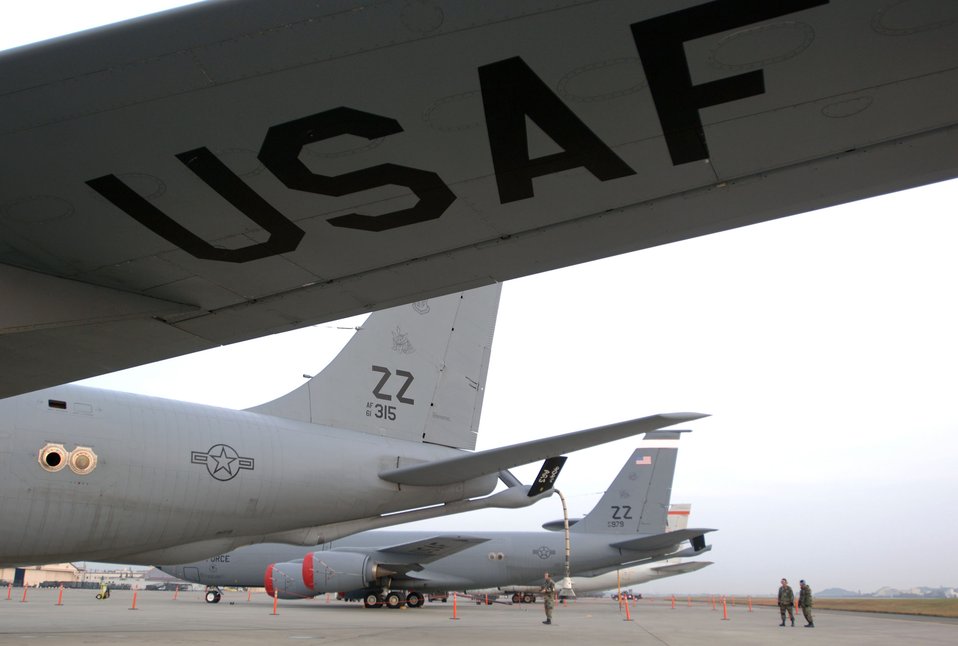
Keeping Stratotankers flying

YOKOTA AIR BASE, Japan (AFPN) -- (Left to right) Tech Sgt. Julian Christian, Staff Sgt. Gene Pietro and Senior Airman James Taimanglo inspect their KC-135 Stratotanker aircraft before an exercise Cope North 05 morning sortie. Cope North is a bilateral exercise designed to enhance U.S. and Japanese air operations. It gives pilots from both countries opportunities to conduct training in air combat tactics, electronic combat and airborne air control. The Airmen are with the 718th Aircraft Maintenance Squadron here.